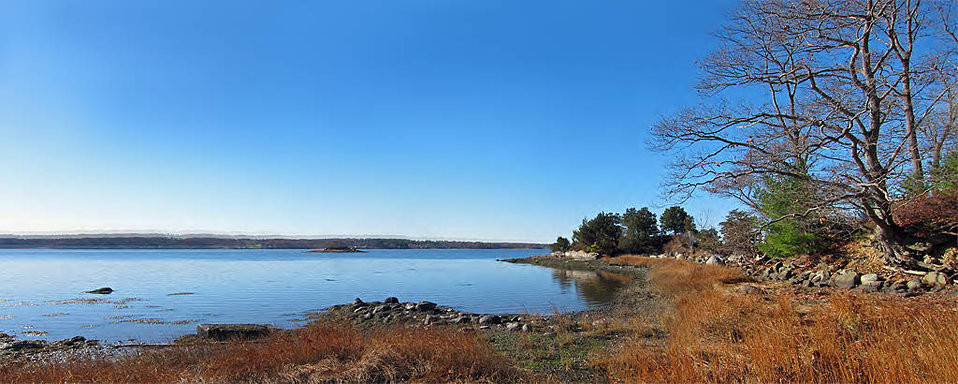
Great Bay National Wildlife Refuge

Photo credit: USFWS/Matt Poole

Coastal ecosystems will experience climate impacts that include: sea and lake level changes; increases in storm surge; alterations in precipitation patterns and subsequent delivery of freshwater, nutrients, pathogens, and sediment; changes in intensity of coastal storms; changes in water chemistry; and changes in sea ice